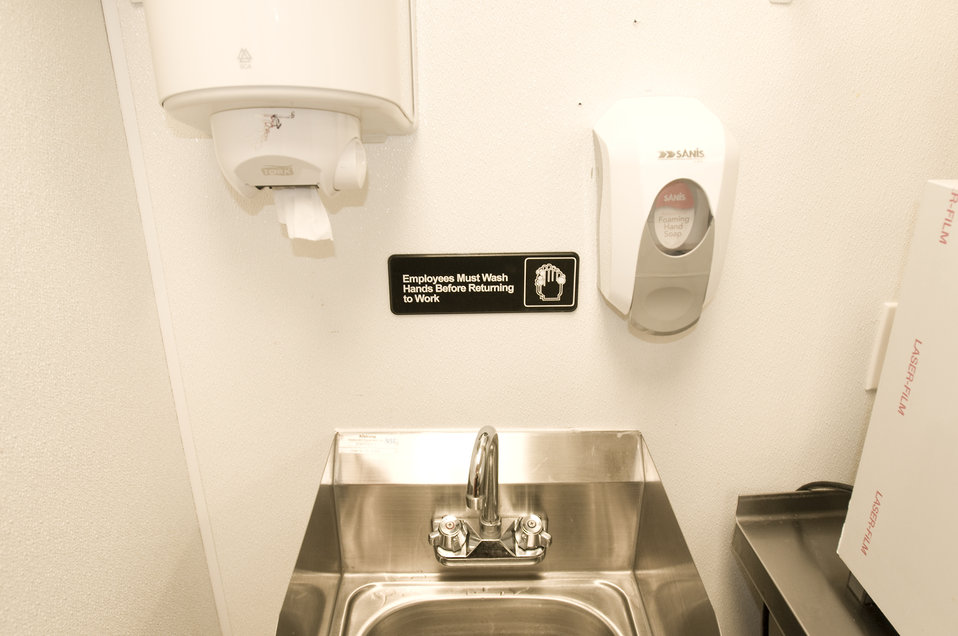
This image depicts the interior of a bathroom's sink area, and included the foaming hand soap dispenser above the sink to the right, and to the left, the paper towel dispenser. In between the two, adhered to the wall, was a sign which read 'Employees Must Wash Hands Before Returning to Work', and included a simple graphic depicting two hands creating suds, as they scrubbed one another.